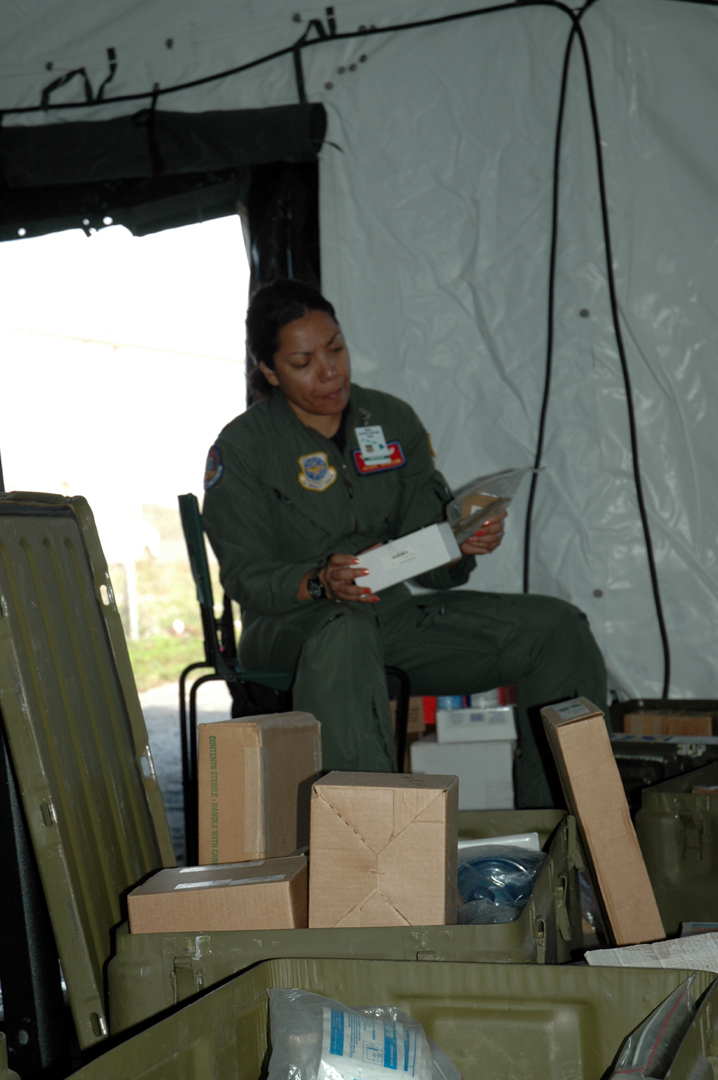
MASF not MASH vital location for wounded

Maj. Jackie Jackson inventories medical equipment Jan. 30 to use in the Mobile Aeromedical Staging Facility during the Pacific Lifeline exercise. Pacific Lifeline is a humanitarian assistance disaster response exercise taking place on three Hawaiian Islands Jan. 26 to Feb. 9. More than 900 Department of Defense personnel are participating. Major Jackson is a flight nurse with the 375th Aeromedical Evacuation Squadron at McChord Air Force Base, Wash.